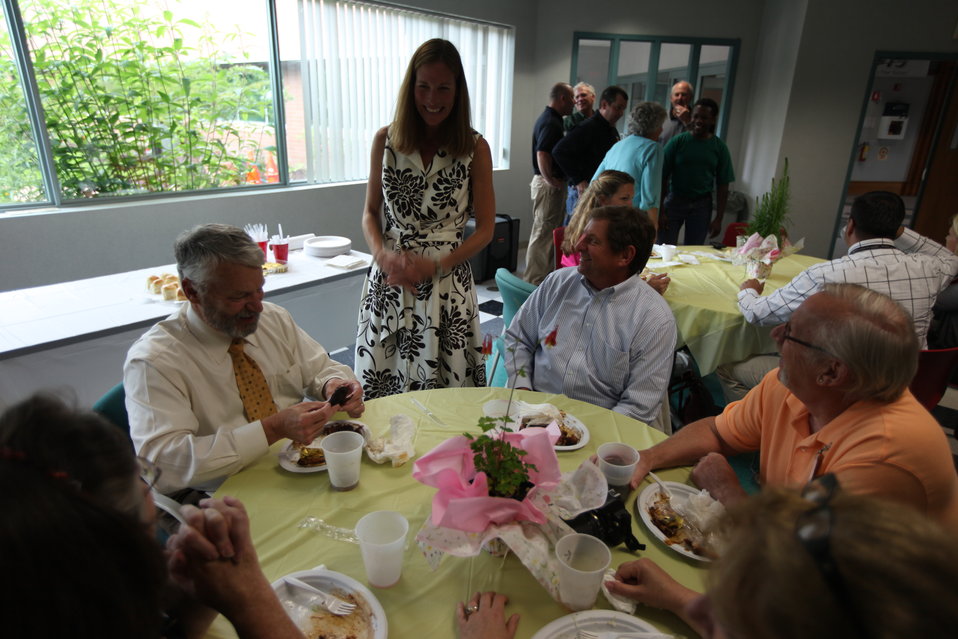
Northeast Region Employee Appreciation Awards

Luncheon